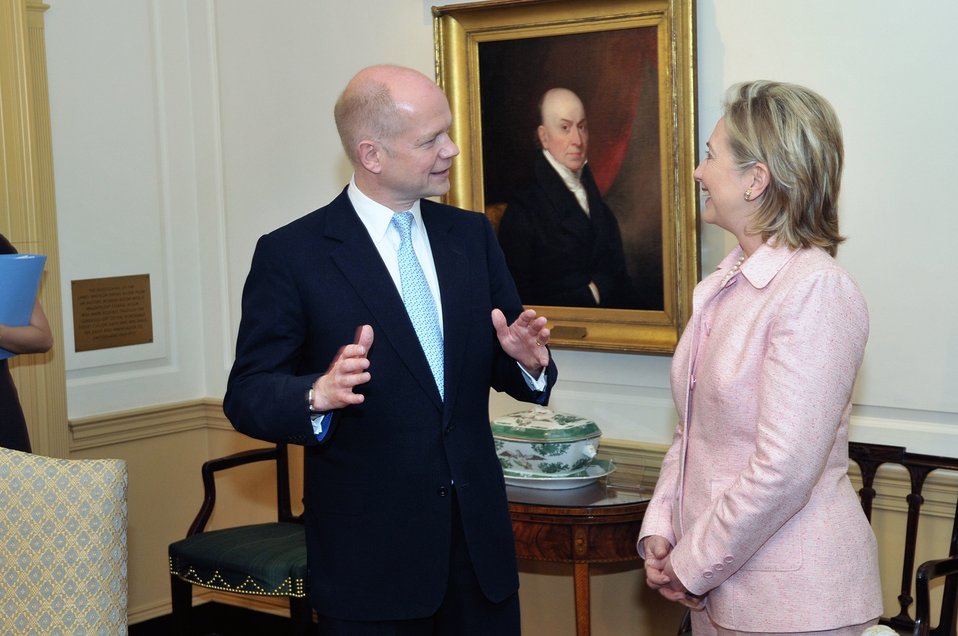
Secretary Clinton Holds a Bilateral With British Foreign Secretary William Hague

U.S. Secretary of State Hillary Rodham Clinton holds a bilateral meeting with British Foreign Secretary William Hague in the Madison Room at the U.S. Department of State, Washington, D.C., May 14, 2010.